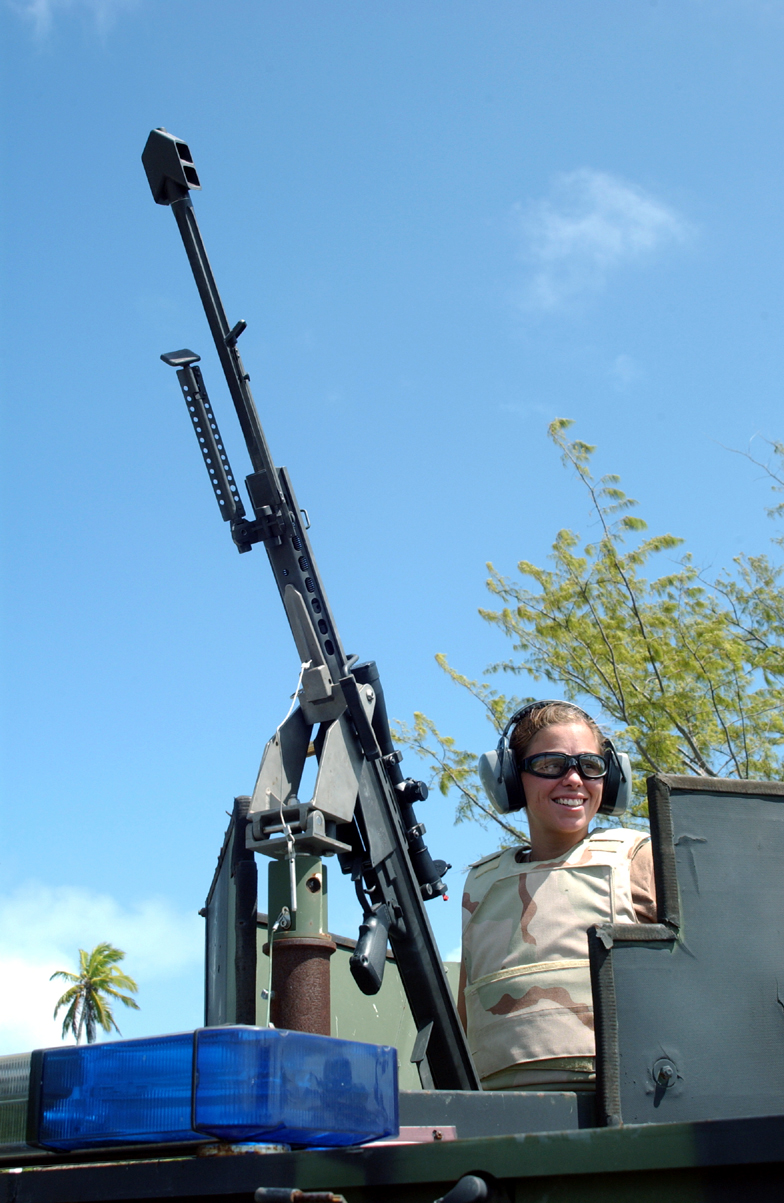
Making every second count

OPERATION ENDURING FREEDOM -- Senior Airman Sunshine Polk awaits approval to fires during an operation with a .50-caliber rifle on a training range at a forward-deployed location. The explosive ordnance disposal technicians use the rifle to disrupt or destroy unexploded ordnance from a safe distance. Airman Polk is assigned to the 40th Expeditionary Civil Engineer Flight and is deployed from Nellis Air Force Base, Nev.